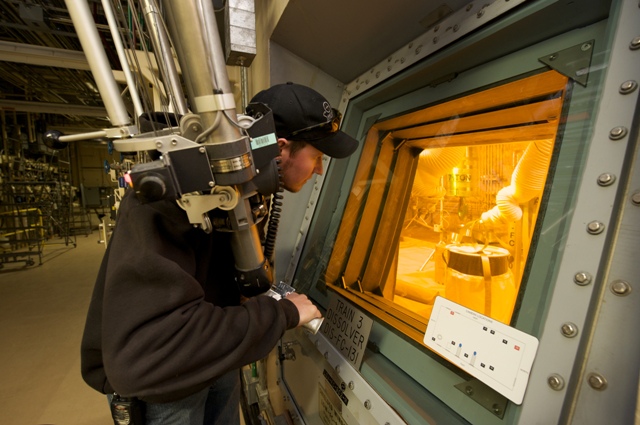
Idaho remote manipulators

A worker uses remote manipulators to repackage waste inside the reactivated CPP-666 hot cell.